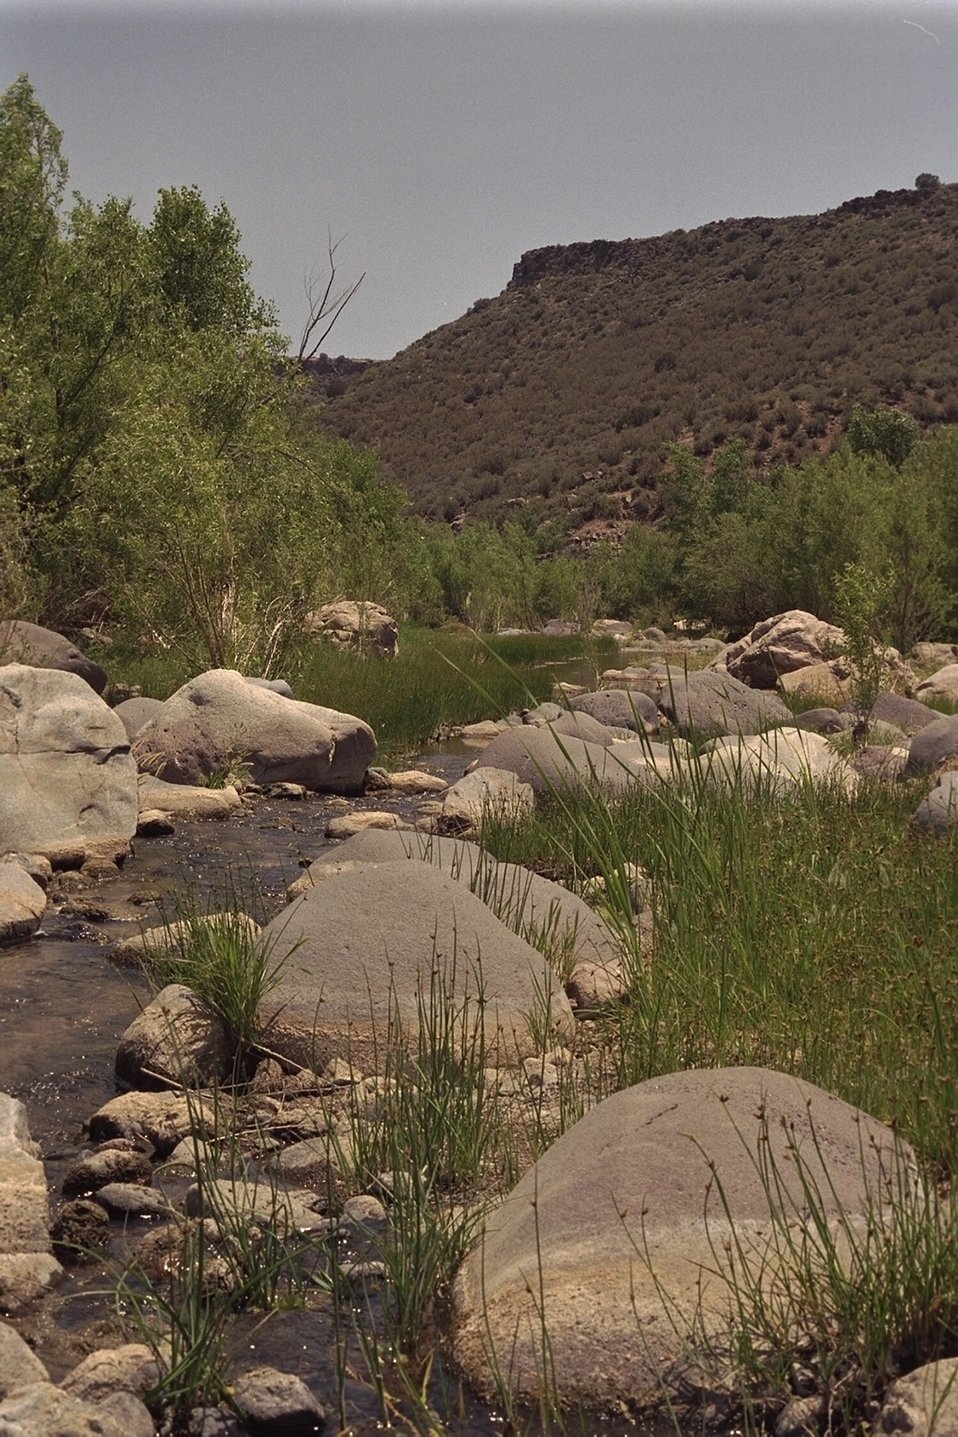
The Agua Fria River runs through the canyon that shares its name.